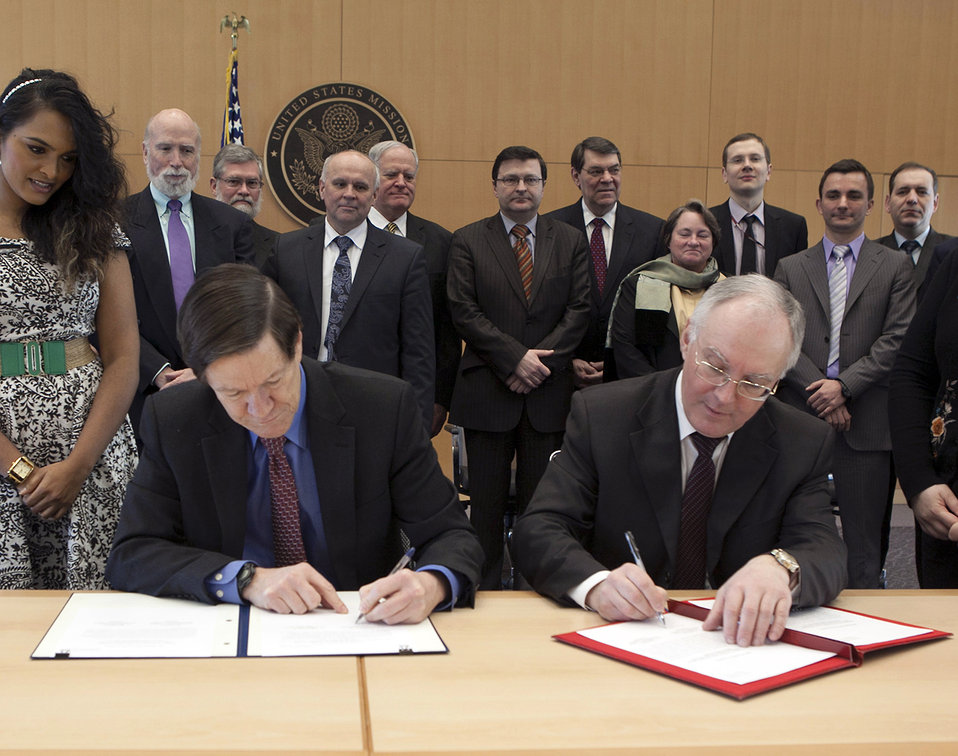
Fifth Session of the Bilateral Consultative Commission Under the New START Treaty

Head of the U.S. delegation, Ambassador John Ordway, left, and Head of the Russian delegation, Vladimir Leontyev, right, sign a decision on the number of launches of ICBMs and SLBMs on which an exchange of telemetric information will be carried out in 2013, during the fifth session of the Bilateral Consultative Commission Under the New START Treaty in Geneva, Switzerland on February 19, 2013.